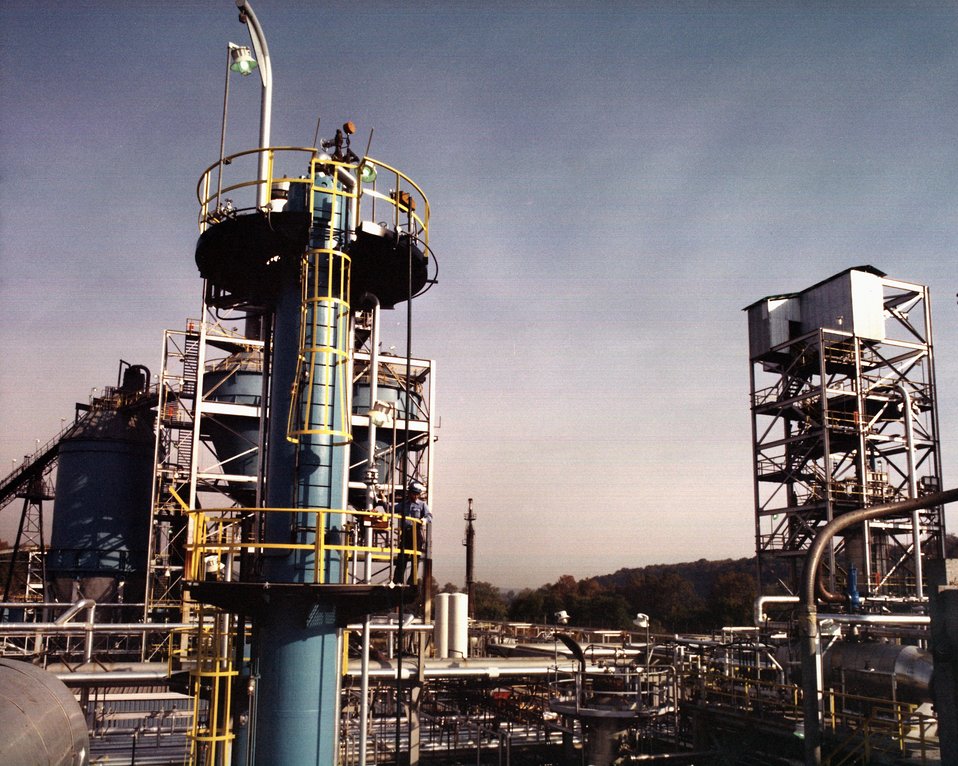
H-COAL PILOT PLANT WILL CONVERT 600 TONS OF COAL PER DAY TO FUEL OIL.